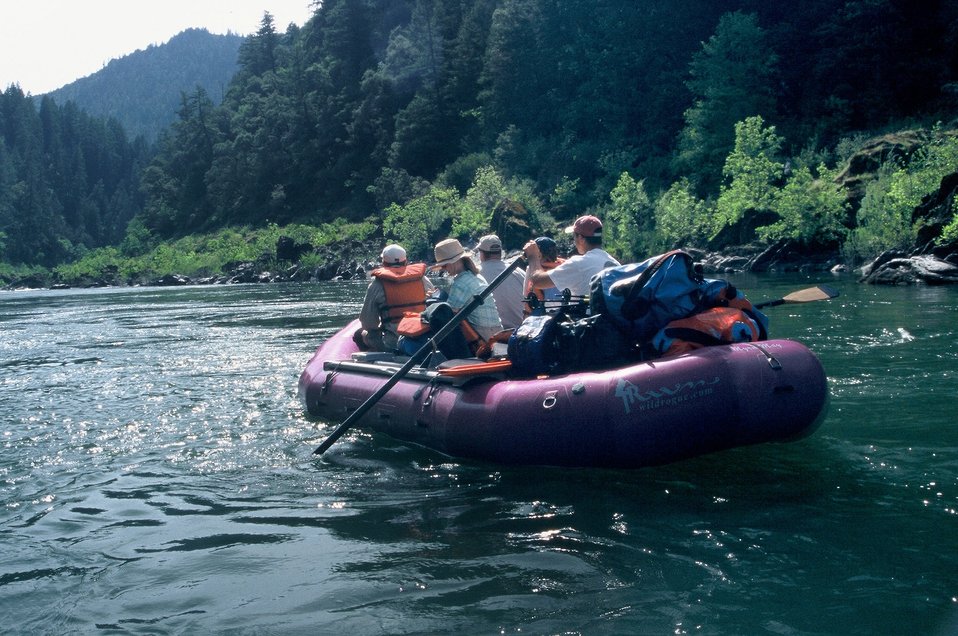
Wild section of the Rogue River from Grave Creek to Foster Bar May 19 to May 22.